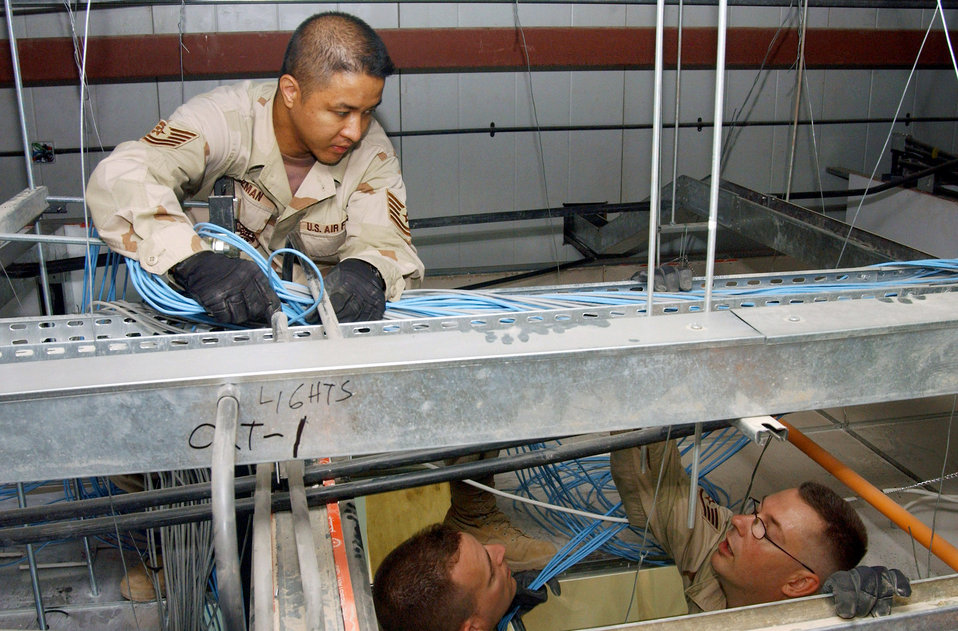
New hospital at Balad

Tech. Sgt. Gary Guzman, Tech. Sgt. Jeremy Harding and Staff Sgt. Robert Luna string data communication cables in the new Air Force Theater Hospital being built at Balad Air Base, Iraq. The new hospital is replacing the old tent structure. Throughout the transition, Airmen have pulled more than 50,000 feet of computer cables; set up computers, phones and paging systems and more. The new hospital is scheduled to open Aug. 3. The three NCOs are with the 332nd Expeditionary Medical Support Squadron.